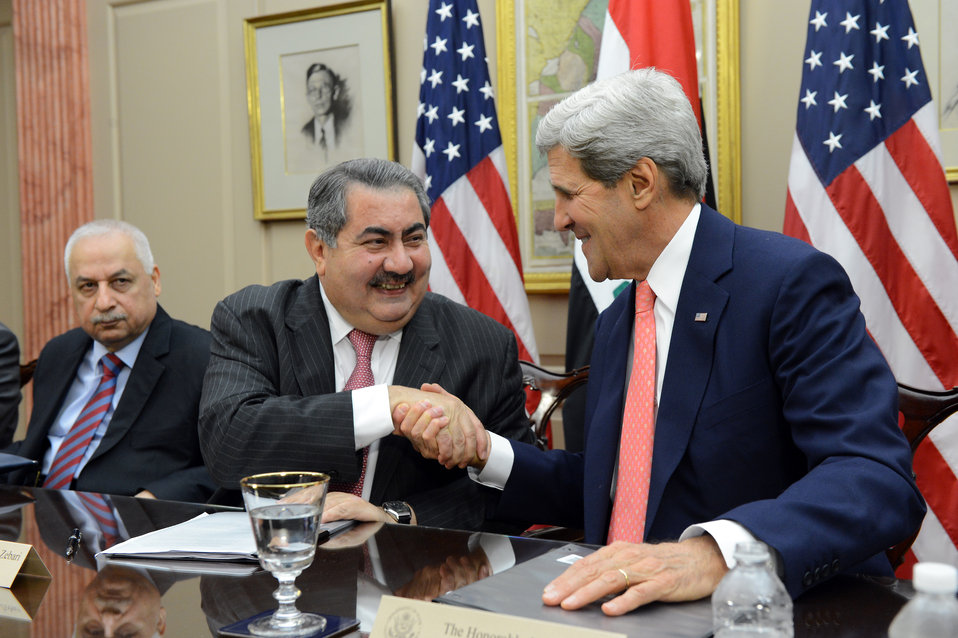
Secretary Kerry and Iraqi Foreign Minister Zebari Shake Hands at the Fourth Meeting of the U.S.-Iraq Political and Diplomatic Joint Coordination Committee

U.S. Secretary of State John Kerry and Iraqi Foreign Minister Hoshyar Zebari shake hands after delivering remarks at the fourth meeting of the Political and Diplomatic Joint Coordination Committee (JCC), under the U.S.-Iraq Strategic Framework Agreement (SFA), at the U.S. Department of State in Washington, D.C., on August 15, 2013.